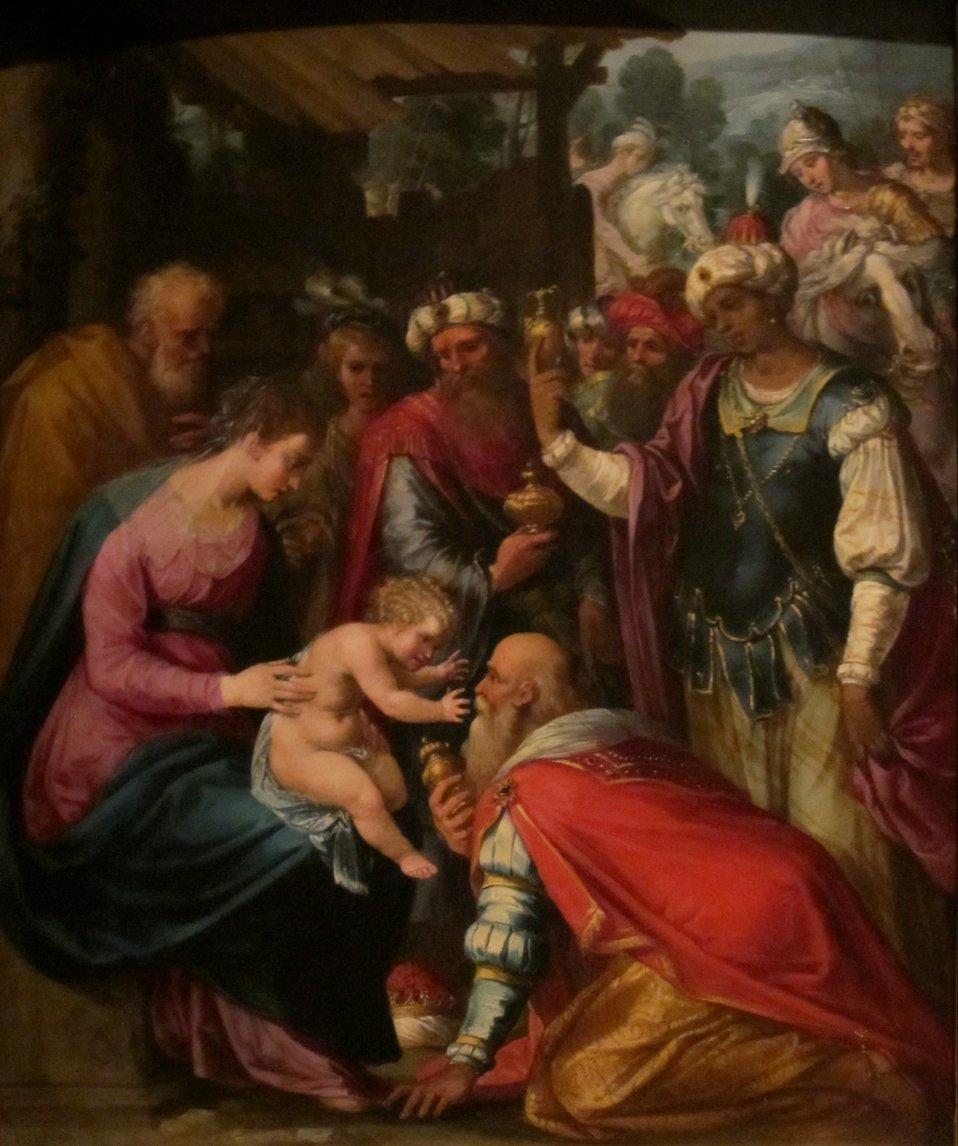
'The Adoration of the Magi' by Guisseppe Cesari, Dayton Art Institute